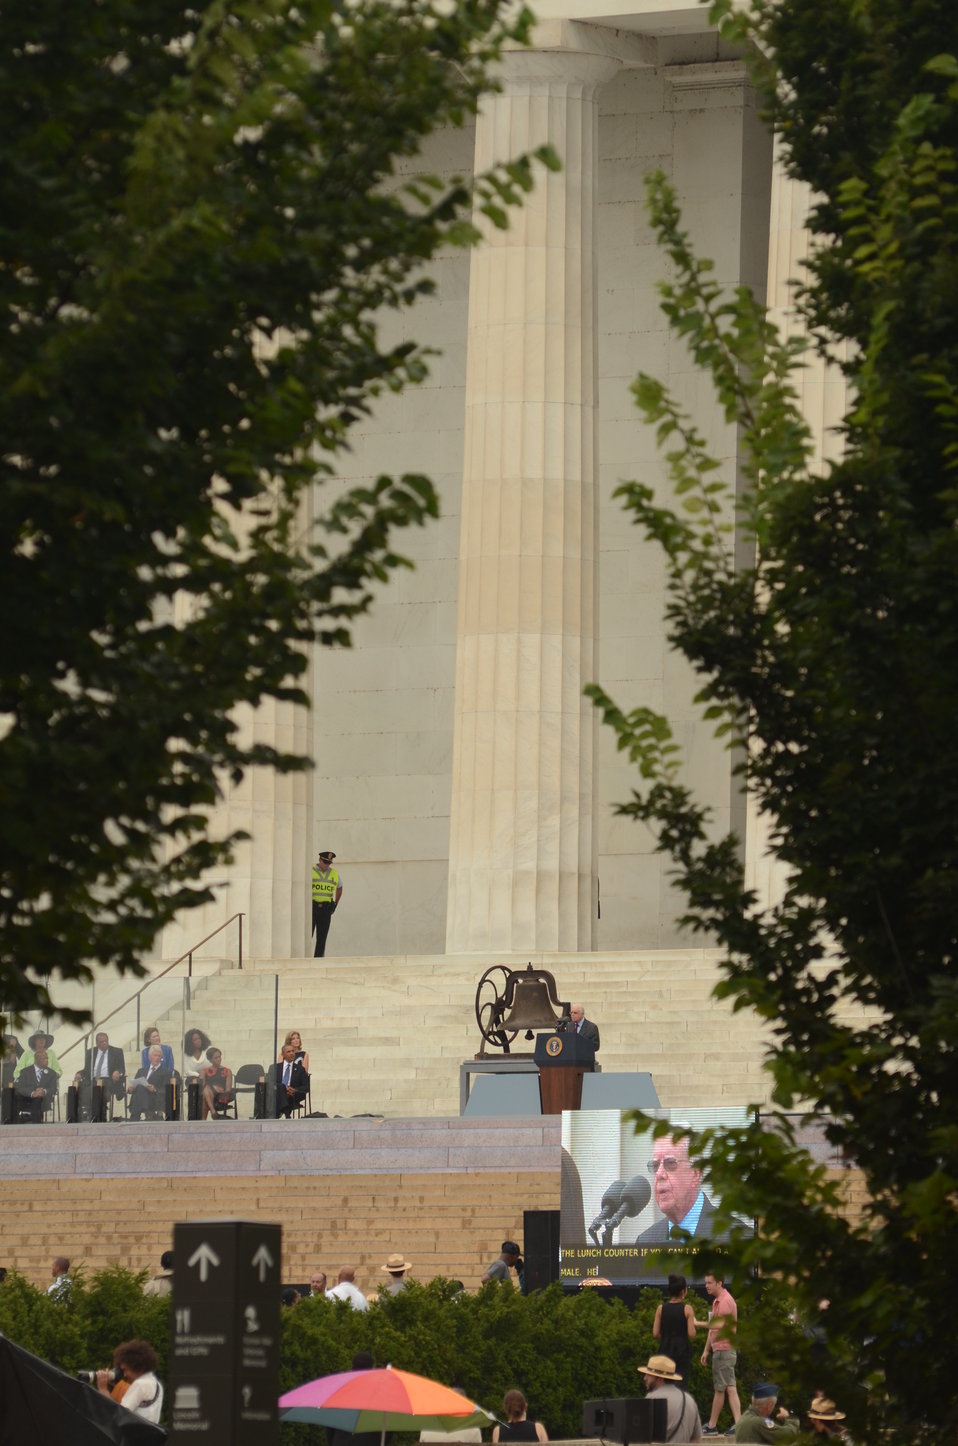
Former President Jimmy Carter speaks to marchers at the Lincoln Memorial for the March on Washington, D.C., on Wed., Aug. 28, 2013.